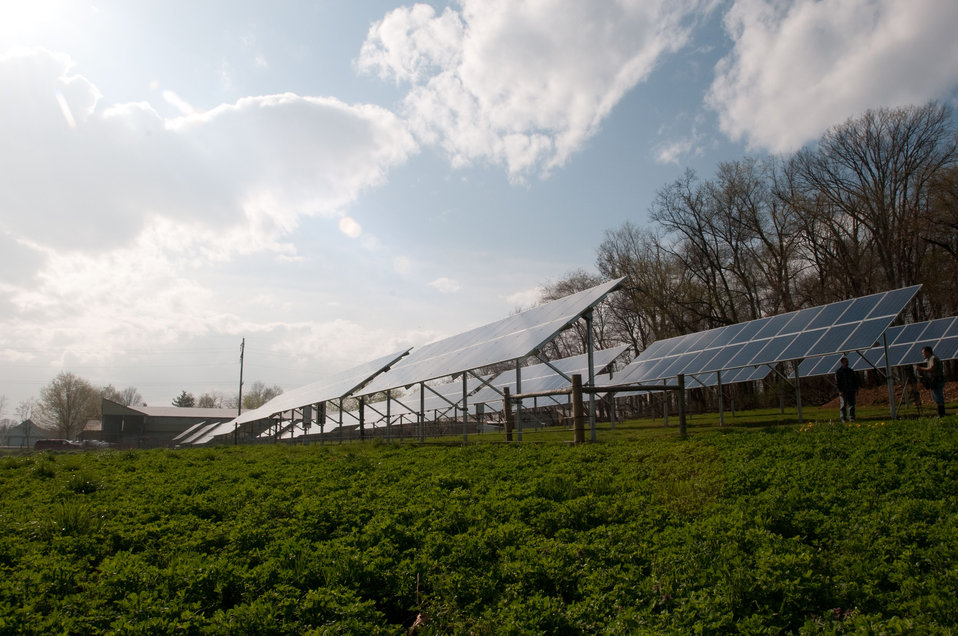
Some of the 240 solar panels at Seldom Rest Farms located, north of Myerstown, PA, on Wednesday, April 20, 2011. The farm raises crops, sheep and 17,000 hens. The Hens are kept in a two story chicken house and produce approximately 2.5 million chicks each year. To supplement their electrical needs, they chose a contractor who knew about United States Department of Agriculture (USDA) Rural Energy for America program (REAP) grants and helped them through the application process. The farm was awarded a $152,000 grant (25% of the cost). to install the 1001kW solar array to power their farm, a neighboring farm and homes on the local electrical grid. The 240 solar panels were ground mounted with 5-foot clearance underneath to allow sheep to graze and rest underneath protected from the rain, sun or snowfall. Ten inverters change the DC electrical energy from the panels into AC energy that goes into the local power grid. Spring statistics show it is producing more than expected. REAP offers grants and/or loan guarantees for the purchase and installation of renewable energy generating systems and for energy efficiency improvements.